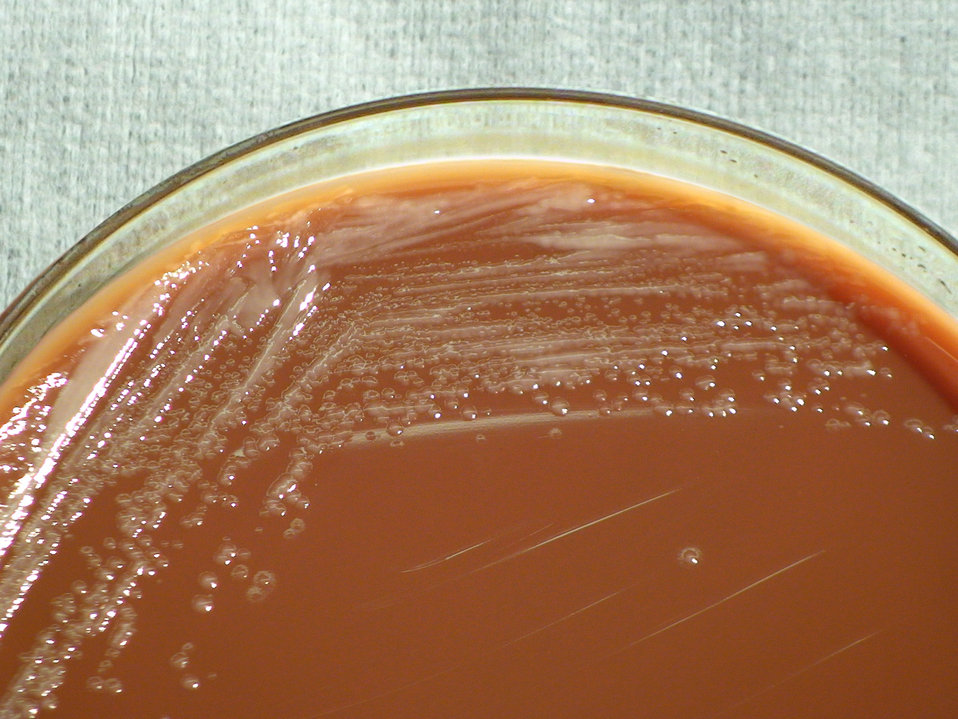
This photograph depicts the colonial morphology displayed by Gram-negative Yersinia pestis bacteria, which was grown on a medium of chocolate agar, for a 24 hour time period, at a temperature of 25�C. See also PHIL 12468 for the appearance of Y. pestis colonies grown on the same medium, and at the same temperature, but for twice the time period (48hr); PHIL 12469 and 12470, for Y. pestis colonies grown on the same medium, and at the same temperature, but for three times the time period (72hr); PHIL 12471 displaying growth on the same medium, but at a greater temperature (37�C), and for twice the time period (48hr); PHIL 12472 displaying growth on the same medium, but at a greater temperature (37�C), and for three times the time period (72hr).